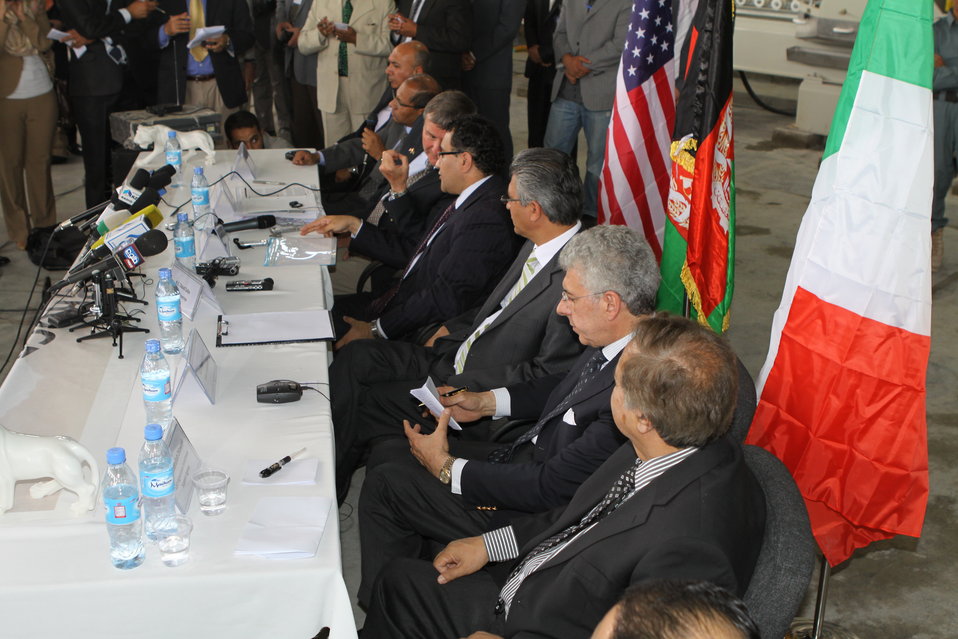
100525 Hirat Marble Conference 370